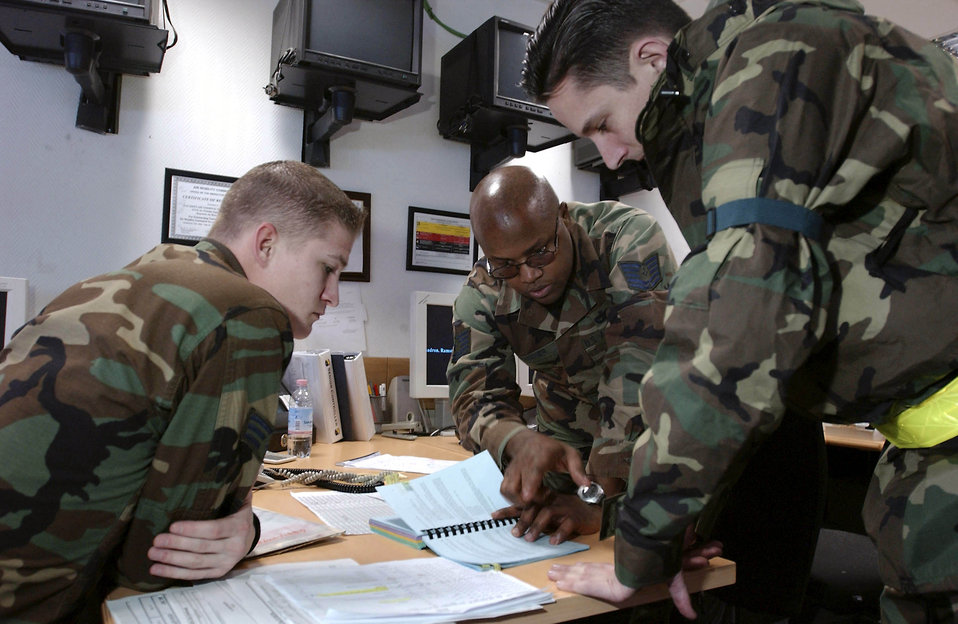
Move passengers

RAMSTEIN AIR BASE, Germany -- Senior Airman Patrick Wagnon (from left), Tech. Sgt. Donald Drummer and Staff Sgt. Christopher Bergstrom figure out where they need to send buses to move passengers to an awaiting aircraft. The airmen work at the 723rd Air Mobility Squadron's air transportation operations center at Ramstein Air Base, Germany. It is the hub for all the squadron's aircraft support operations.